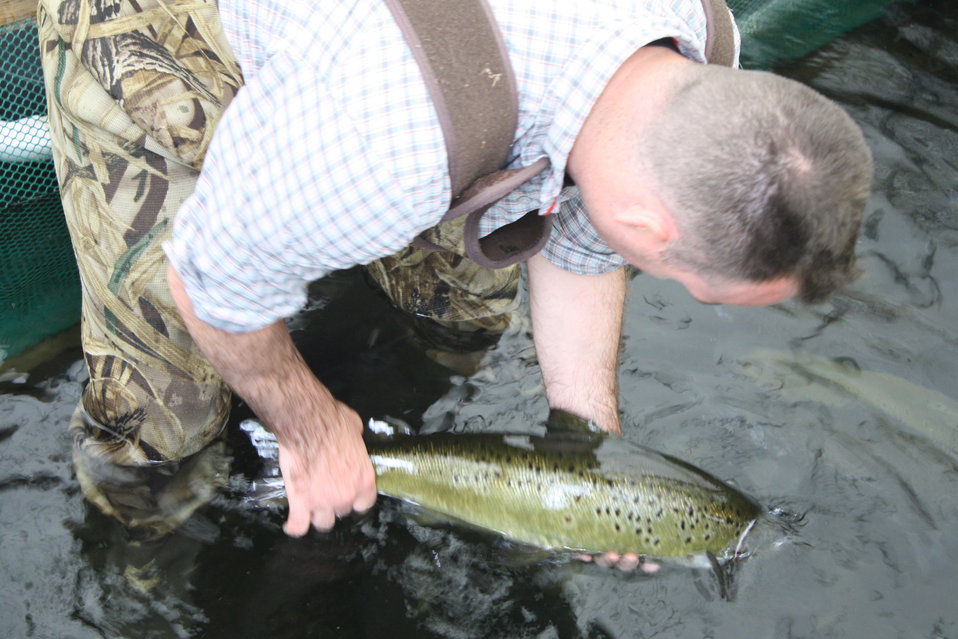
Nashua National Fish Hatchery welcomes regional office employees

Removing Atlantic salmon for weighing and measuring.